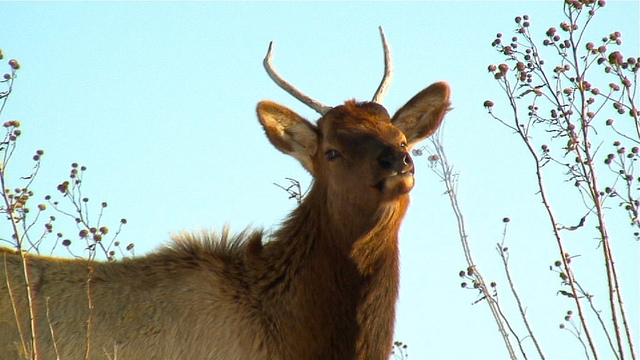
elk in winter

Prairie Wetlands Education Center